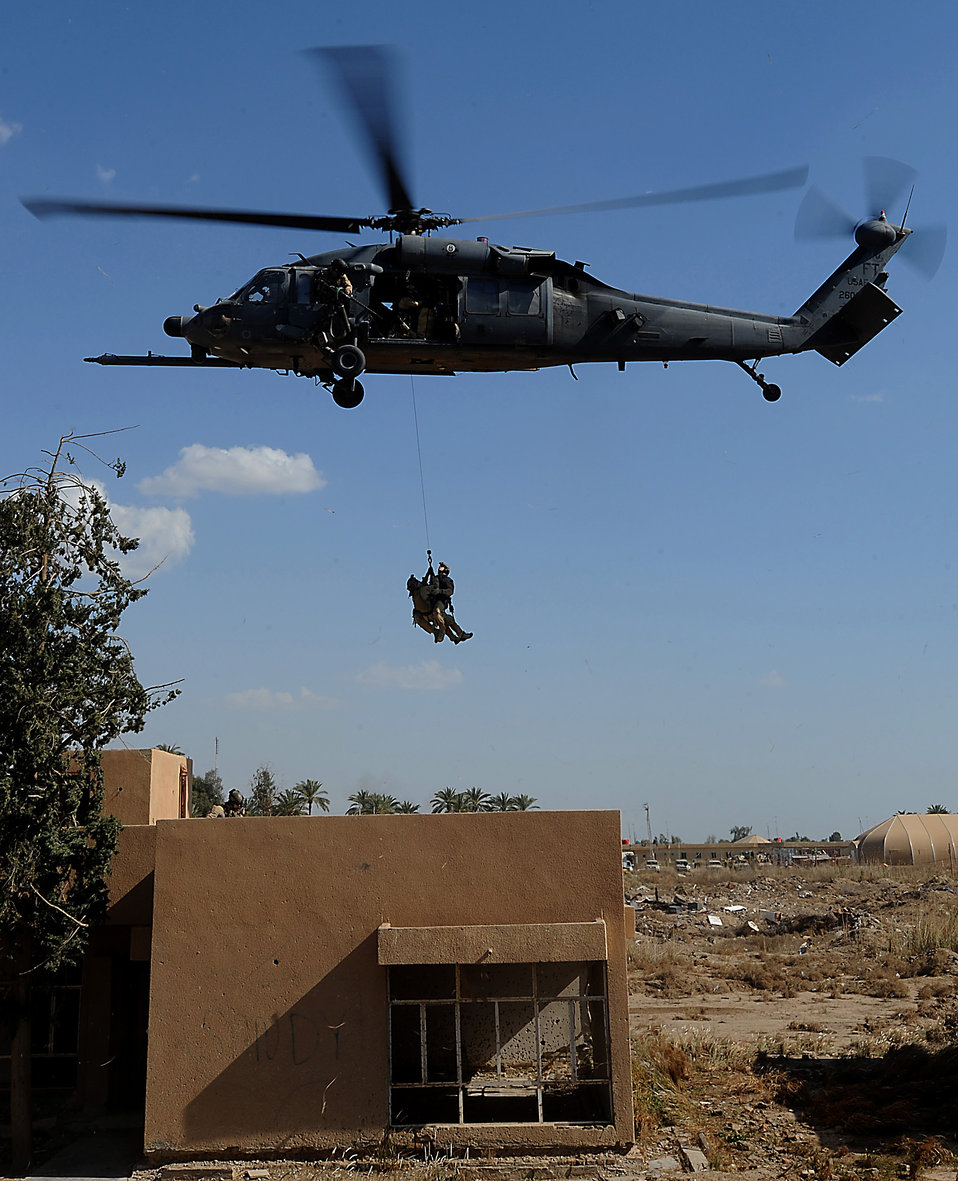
Balad squadron serves as Iraq's 'guardian angels'

A two-man pararescue team is hoisted to an HH-60 Pave Hawk helicopter in a proficiency exercise April 10 outside of Baghdad, Iraq. They are assigned to the 64th Expeditionary Rescue Squadron at Joint Base Balad, Iraq.